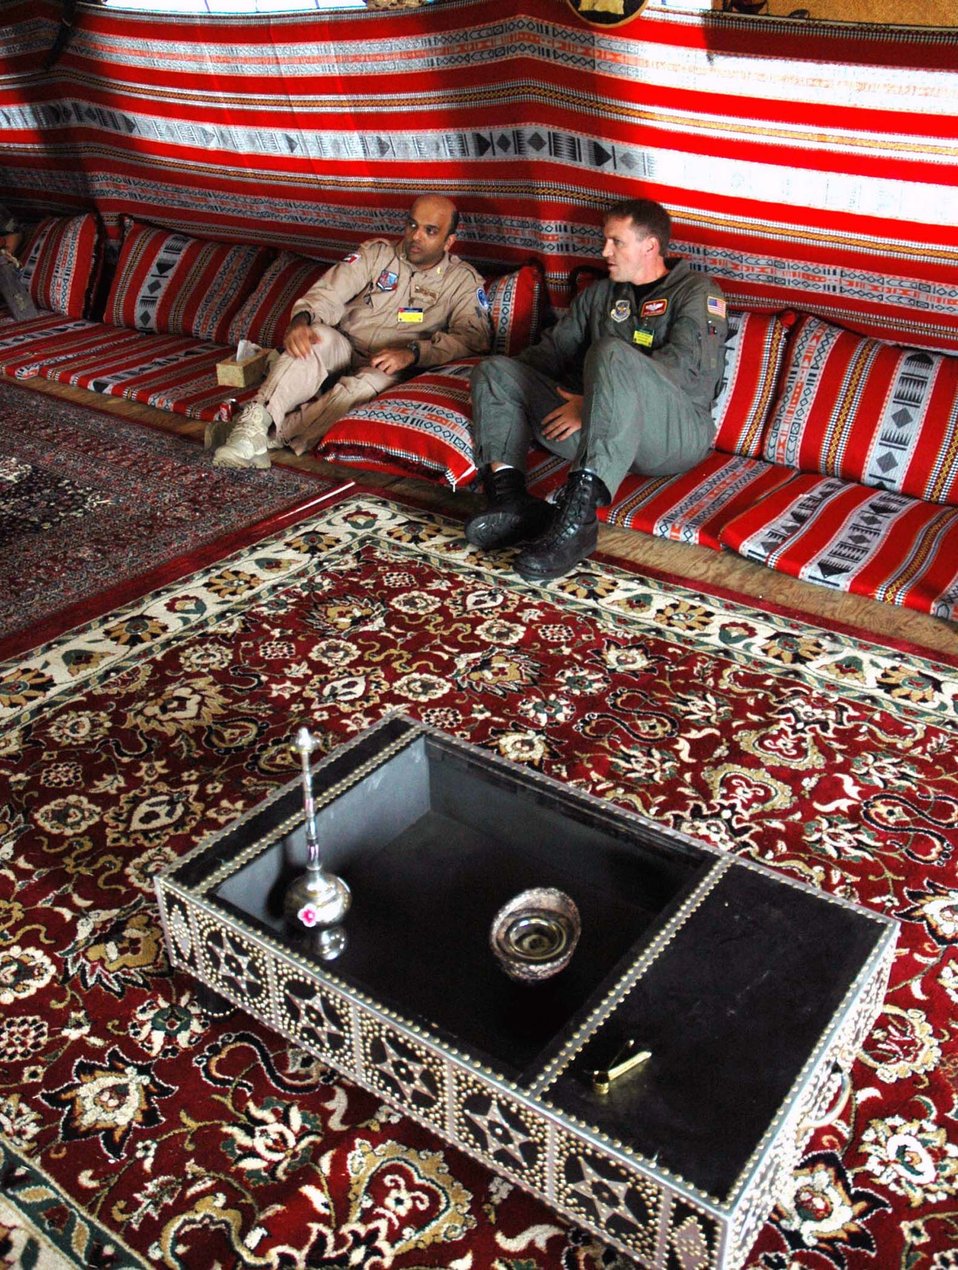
Cultures come together at Air Mobility Rodeo 2007

United Arab Emirates Maj. Jamal Al Awani (left) talks with Maj. John Caplinger July 20 at the UAE tent in Rainier Ranch at McChord Air Force Base, Wash. The UAE team is competing in its first Rodeo competition. Major Al Awani is the United Arab Emirates Rodeo team commander, and Major Caplinger is a pilot from the 10th Airlift Squadron from McChord AFB.